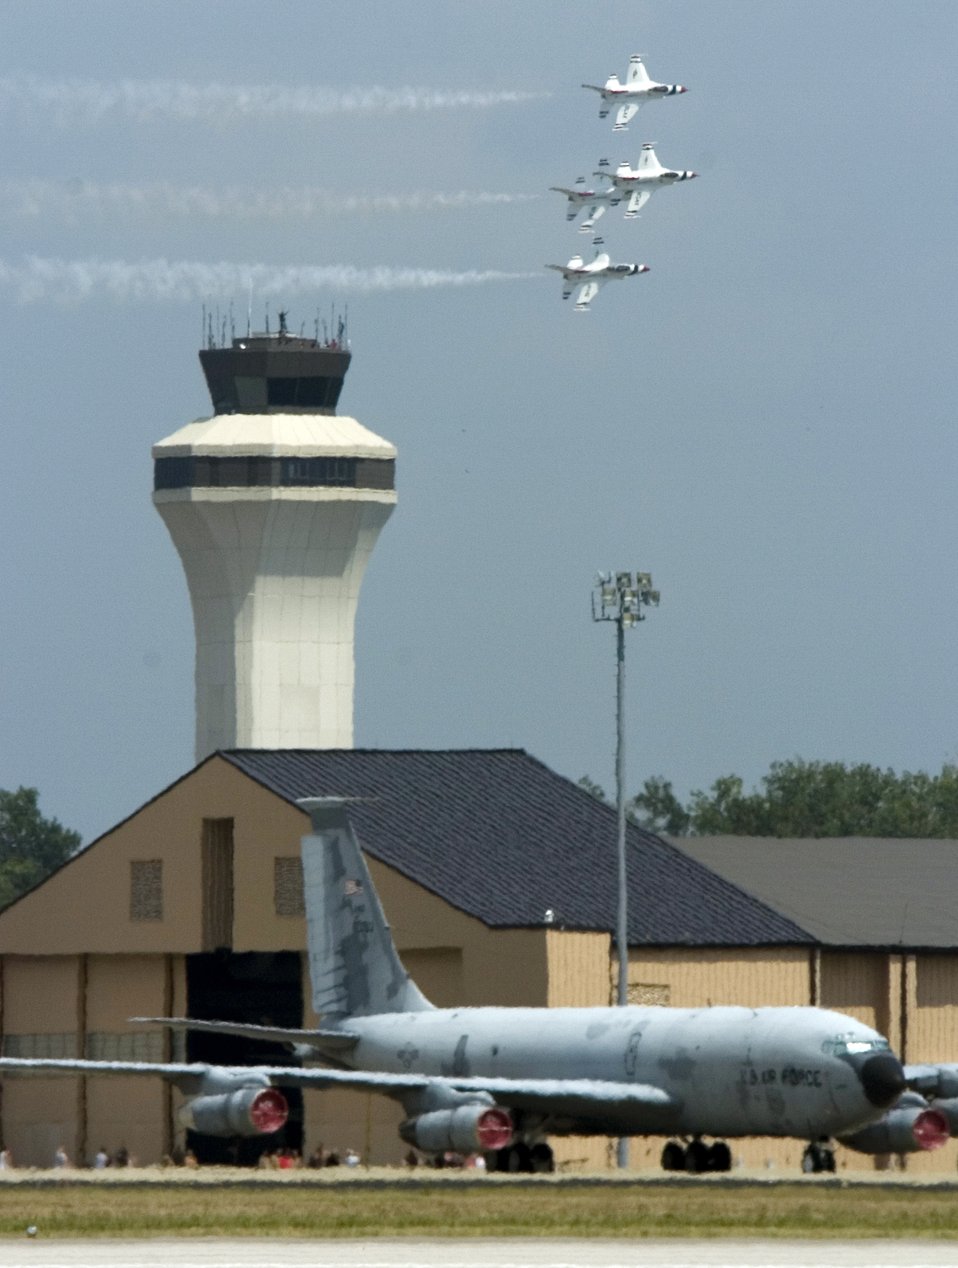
Air Force Week concludes in St. Louis

The Thunderbird diamond formation approaches for a pass in review during a practice show at Scott Air Force Base, Ill., on Aug. 11.